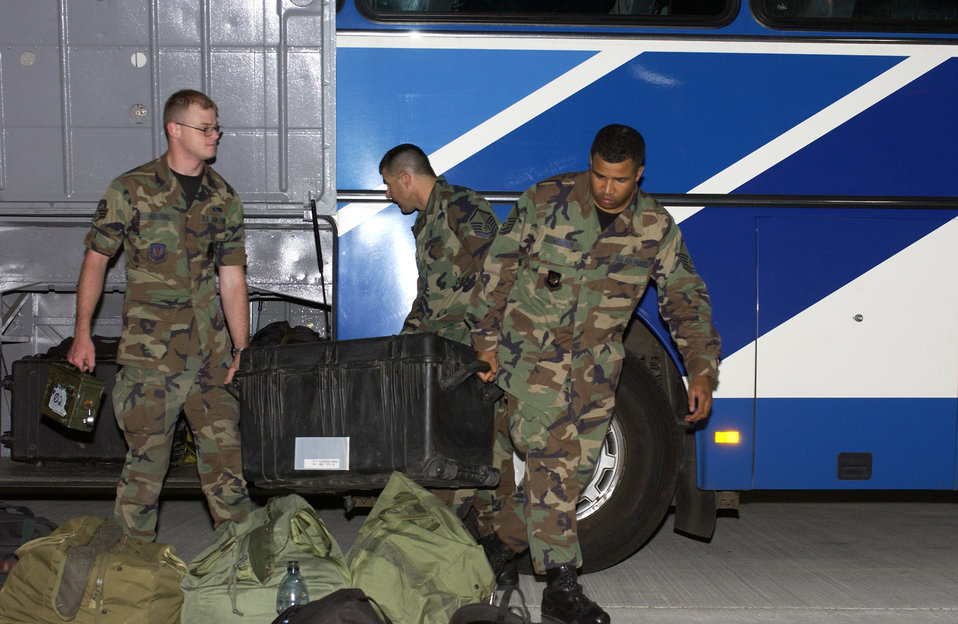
Assisting Americans

Airmen from the 1st Combat Communications Squadron prepare to leave Ramstein Air Base, Germany, on July 19. The Airmen are assisting humanitarian efforts for Americans who have left Lebanon for Cyprus.